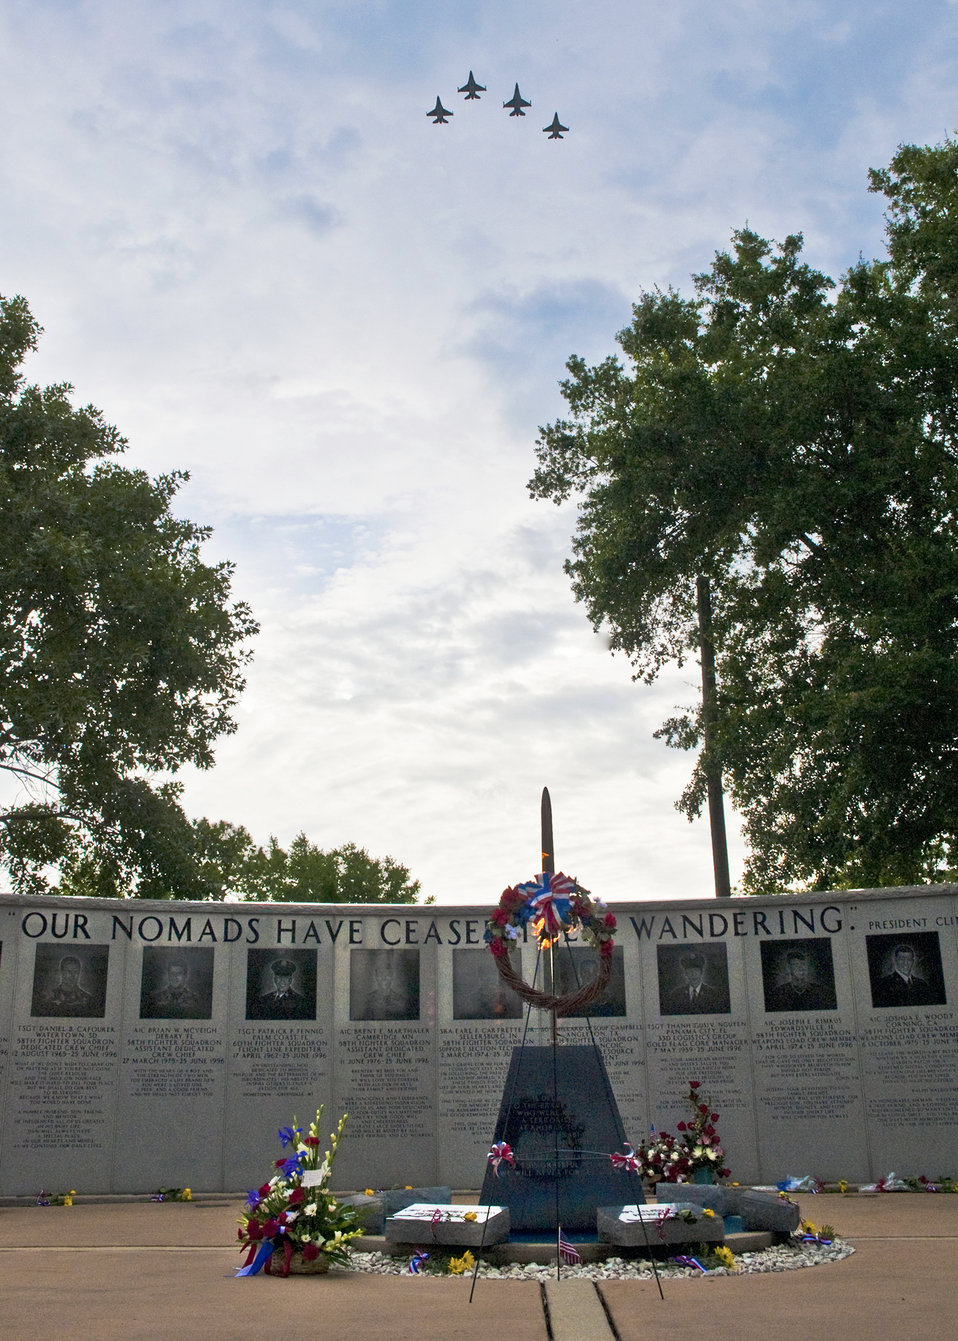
Khobar Towers memorial

F-16s from the 33rd Fighter Wing fly in a missing-man formation over the Khobar Towers Memorial June 24, 2011, at Eglin Air Force Base, Fla. June 25 marks the 15th anniversary of the bombing that killed 19 service members including 12 33rd FW Airmen. Each year, a ceremony is held by the 33rd FW to remember their fallen brothers.